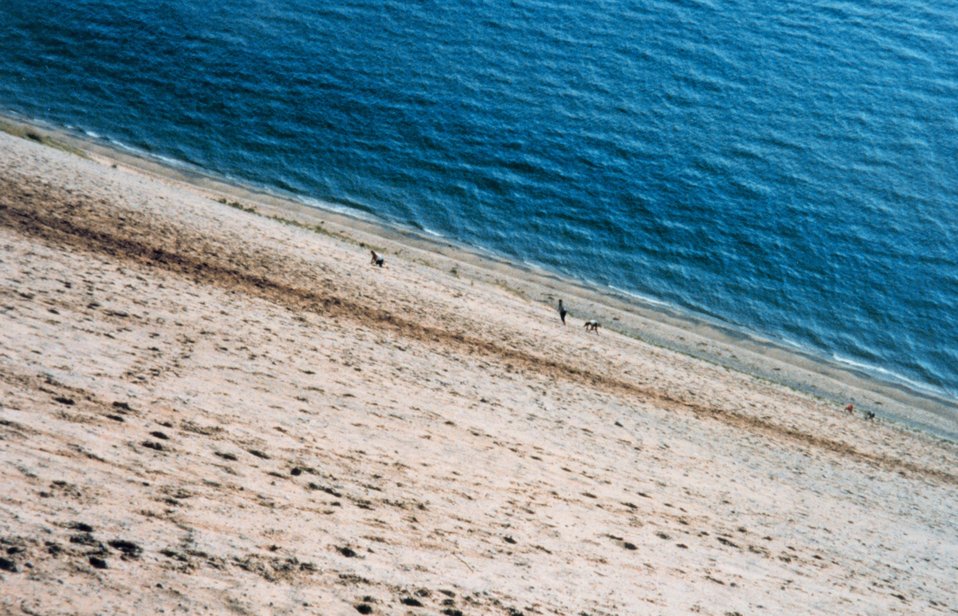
These dunes are hundreds of feet high.